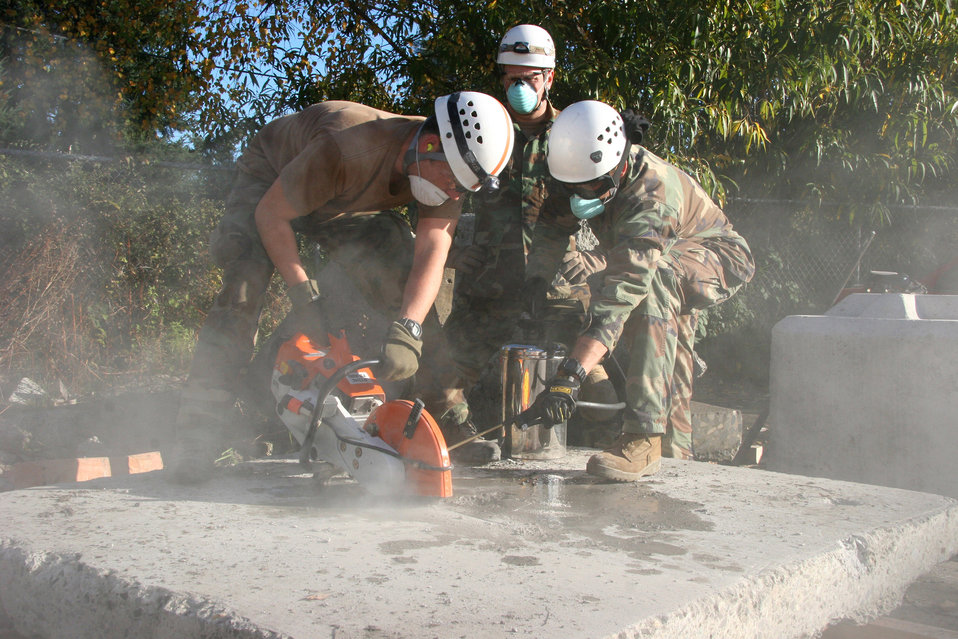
Rescuers learn to make order out of chaos

Staff Sgt. Derrick Brooks, 2nd Lt. Michael Vanzanten and Senior Airman Mark McHugh make a triangle cut in a slab of concrete as part of the Roco Rescue Tactical Confined Space and Collapsed Structure Technician training exercise Oct. 27 in Vancouver, Wash. Sergeant Brooks and Airman McHugh are pararescuemen and Lieutenant Vanzanten is a combat rescue officer with the 304th Rescue Squadron at Portland Air National Guard Base, Ore.